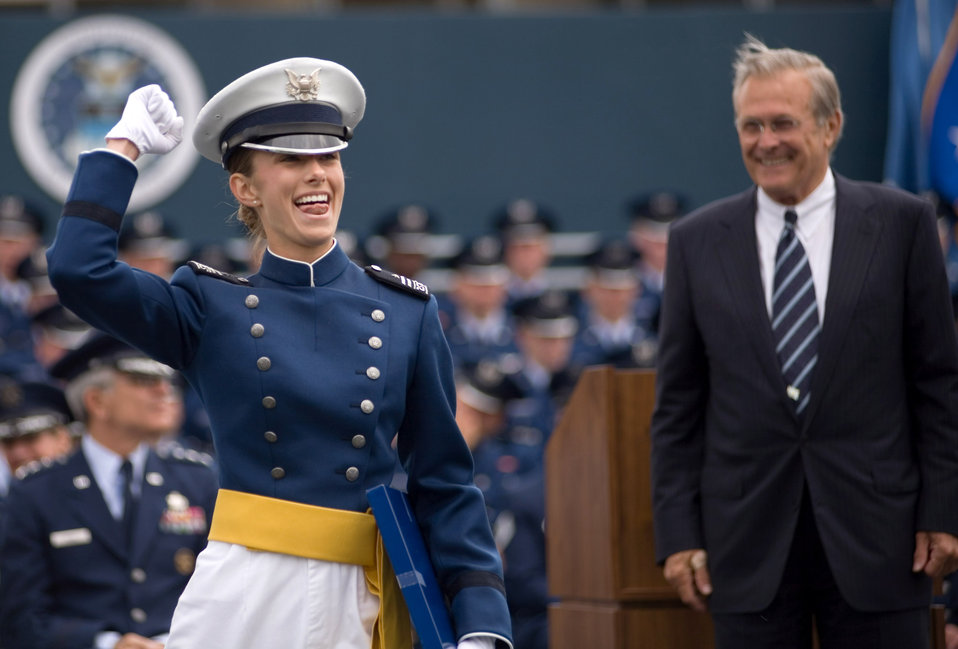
Distinguished grad

Second Lt. Liesl Shockley celebrates after receiving her diploma from Secretary of Defense Donald H. Rumsfeld at the U.S. Air Force Academy's 2006 graduation ceremony in Colorado Springs, Colo., on Wednesday, May 31, 2006. Lieutenant Shockley finished second in her class of 879.